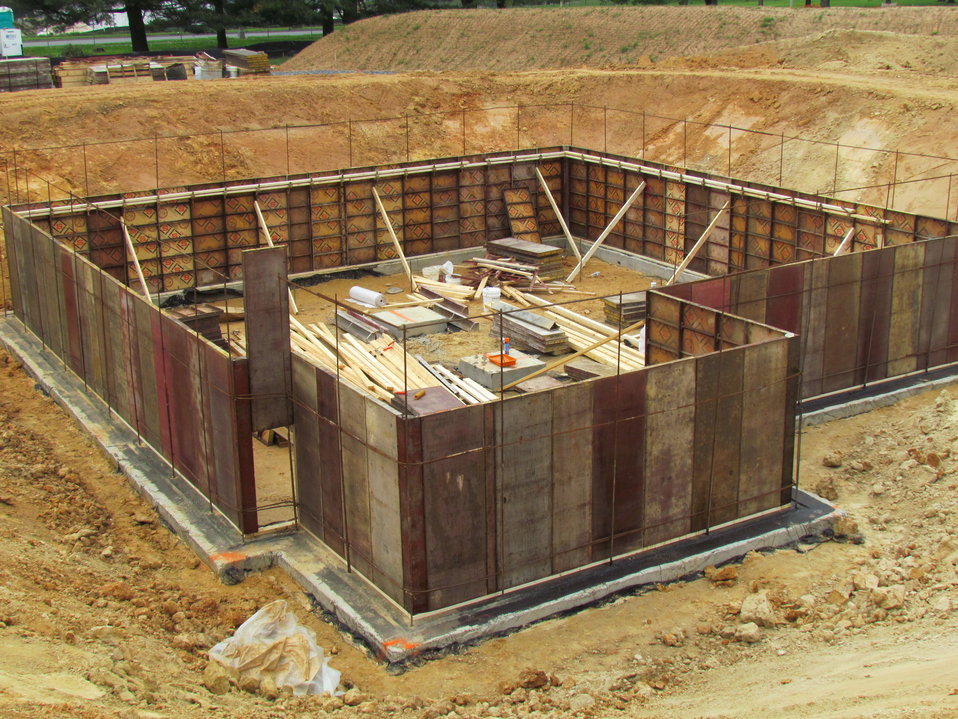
Net-Zero Energy Residential Test Facility - Construction photo showing erection of concrete forms for basement wall.